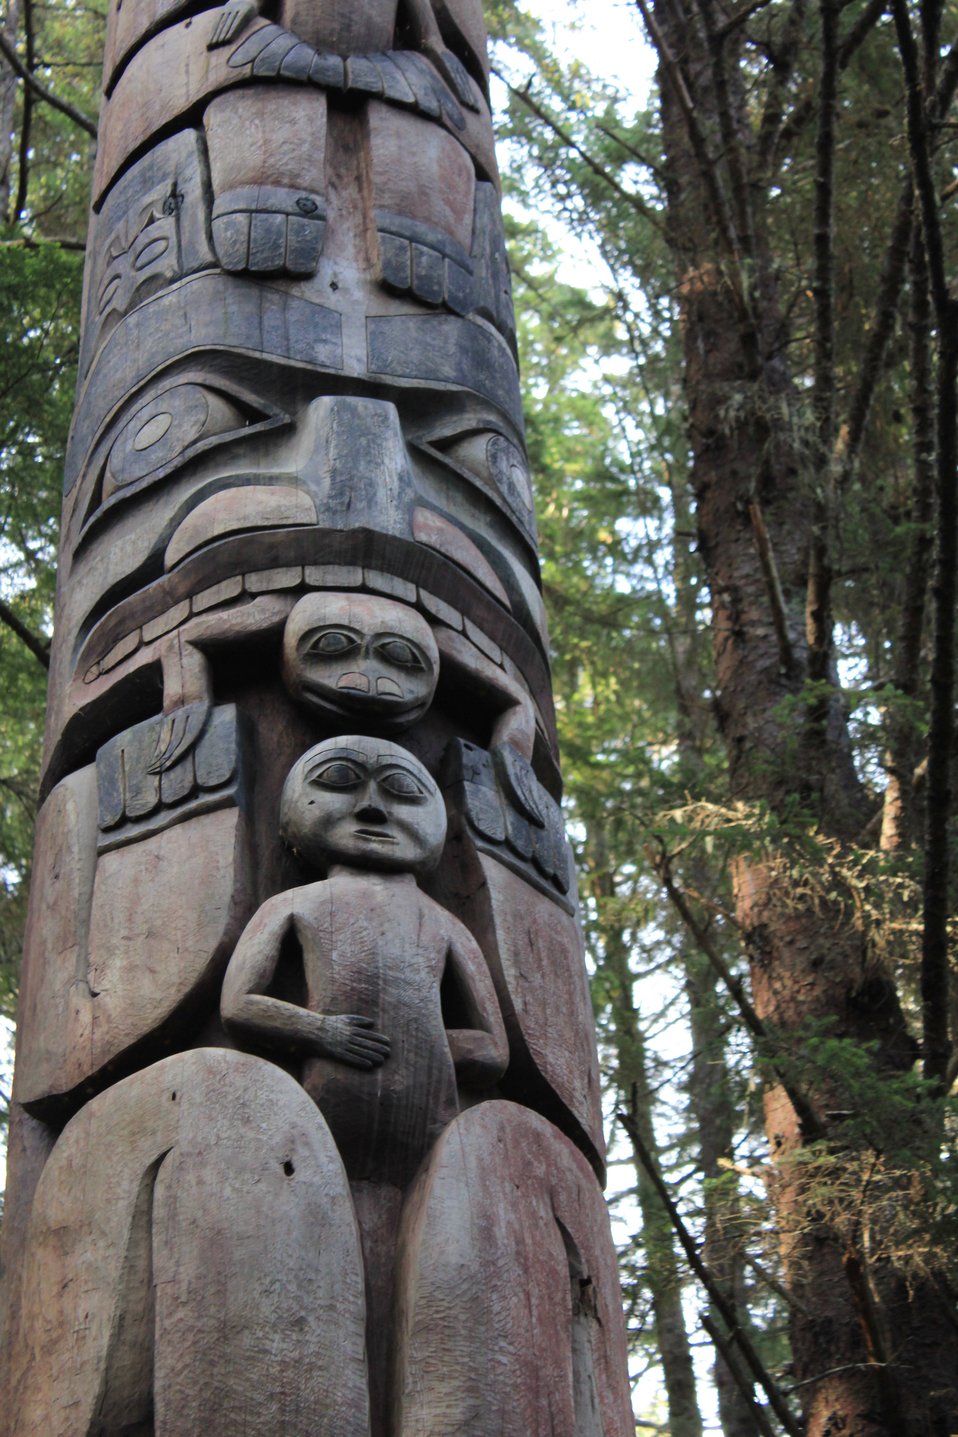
Intricate carving of totem pole.